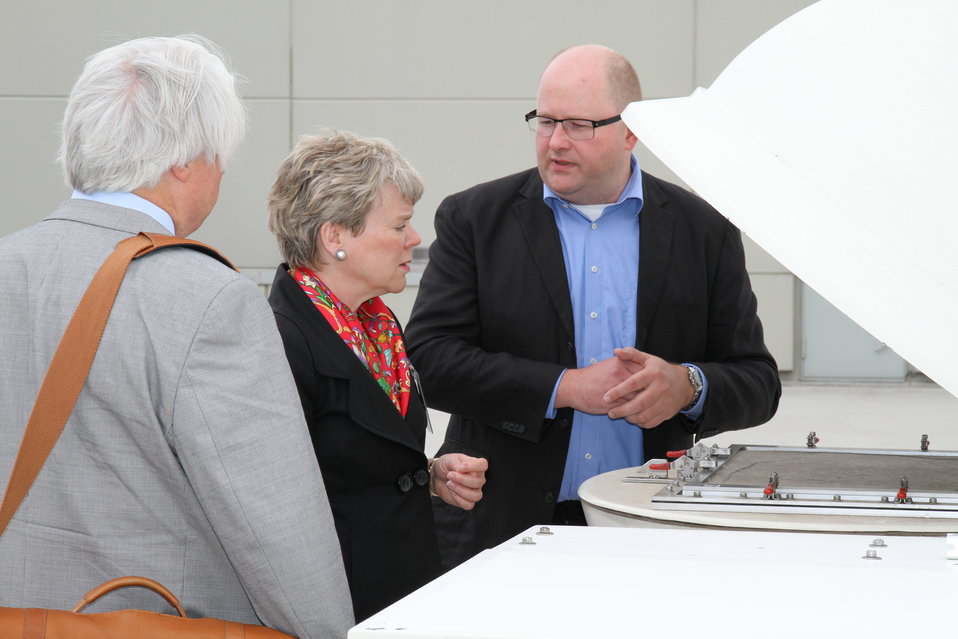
Secretary Gottemoeller Visits Comprehensive Nuclear Test Ban Treaty Organization in Vienna

Assistant Secretary for Arms Control, Verification and Compliance Rose Gottemoeller receives a tour of the Comprehensive Nuclear Test Ban Treaty Organization in Vienna, Austria, on June 14, 2011.